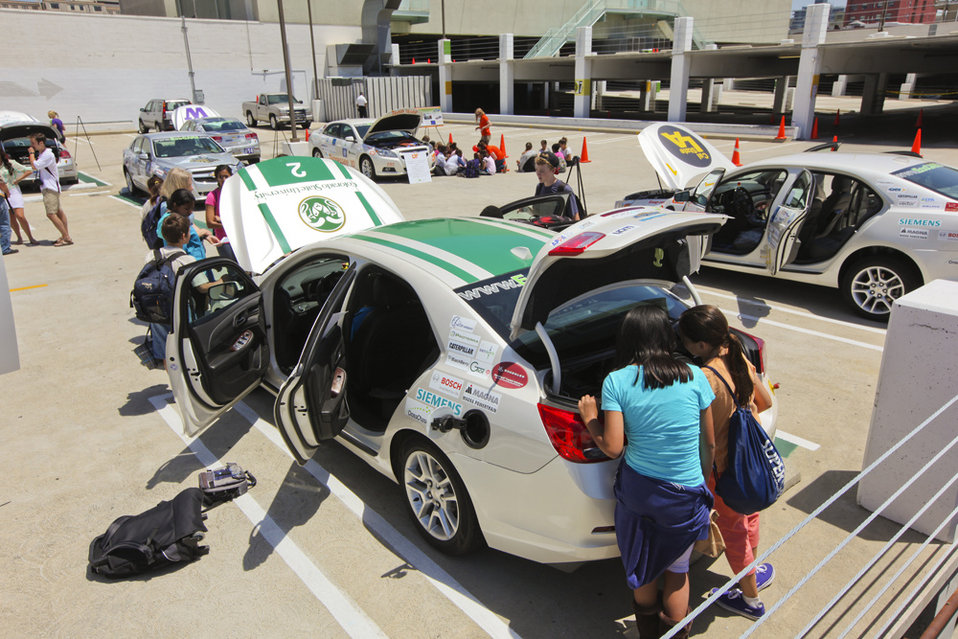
As part of the second half of the Year 2 finale in San Diego, students hosted an educational day. A middle school science class from the area checked out the teams’ vehicles while team members taught students about energy efficient vehicle design. Pictured here, a few students look at all the features of Colorado State University’s vehicle. | Photo courtesy of EcoCAR 2.